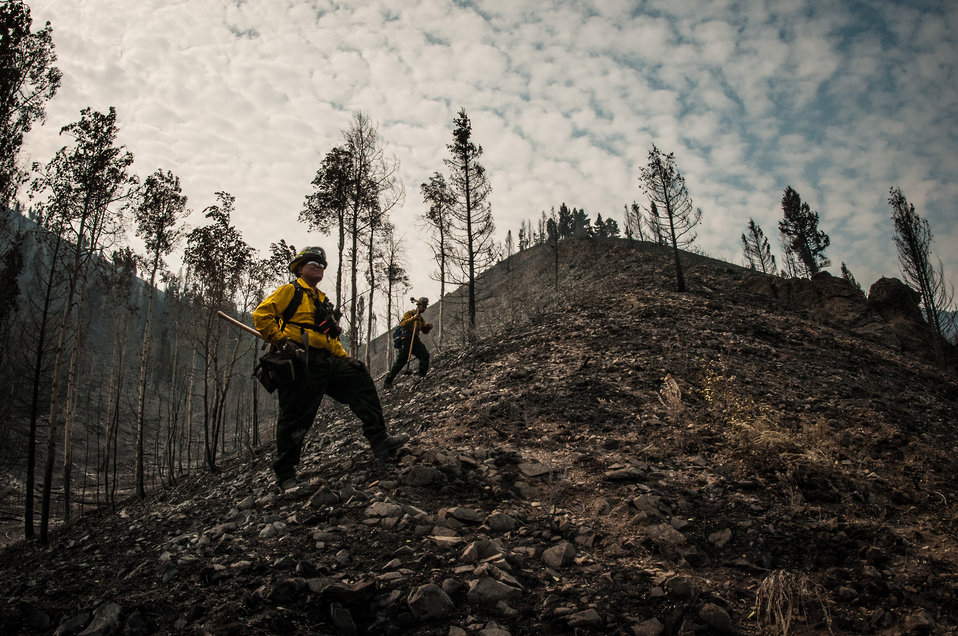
Department of the Interior, Indian Affairs (BIA) Southern Plains Initial Attack Type 2 Crew Ryan Blackstar, is a Sawyer B Faller, looking for hotspots of hot embers above or below the ground that may threaten homes at the bottom of this hill, during the Beaver Creek Fire, west of Hailey, ID, in the U.S. Department of Agriculture (USDA) Forest Service (FS) and Sawtooth National Forest and Bureau of Land Management (BLM) lands, on Wednesday, Aug 21, 2013. A sawyer is a person who runs the power saws to cut down trees. The B qualification means the person has demonstrated sufficient judgment, skill, and knowledge to be trained or certified in moderately complex chain saw operations. Certified Faller B individuals may work independently on project or fireline assignments up to their level of skill. They demonstrate the judgment to decline assignments that exceed their skill level.